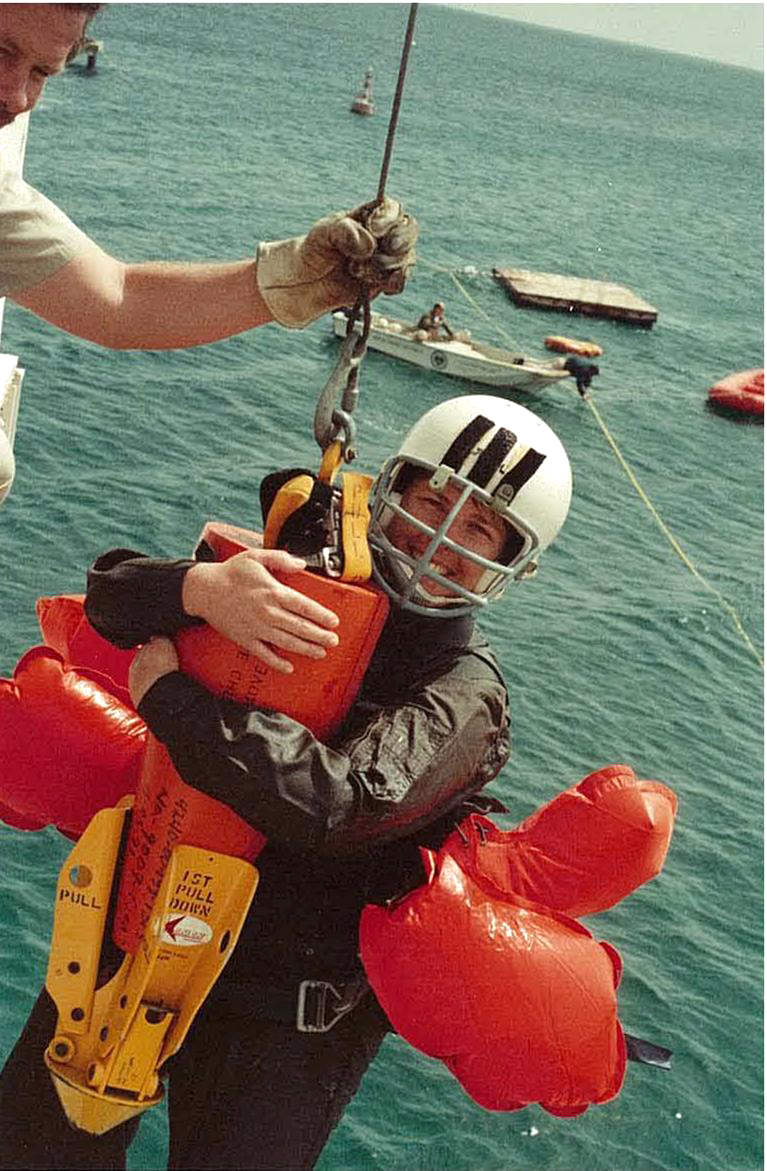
Melissa Hatfield

Melissa “Missi” Hatfield spent 20 years in the Air Force as a meteorologist before retiring in 2000. She joined the SFESO as an office automation assistant in 2010.